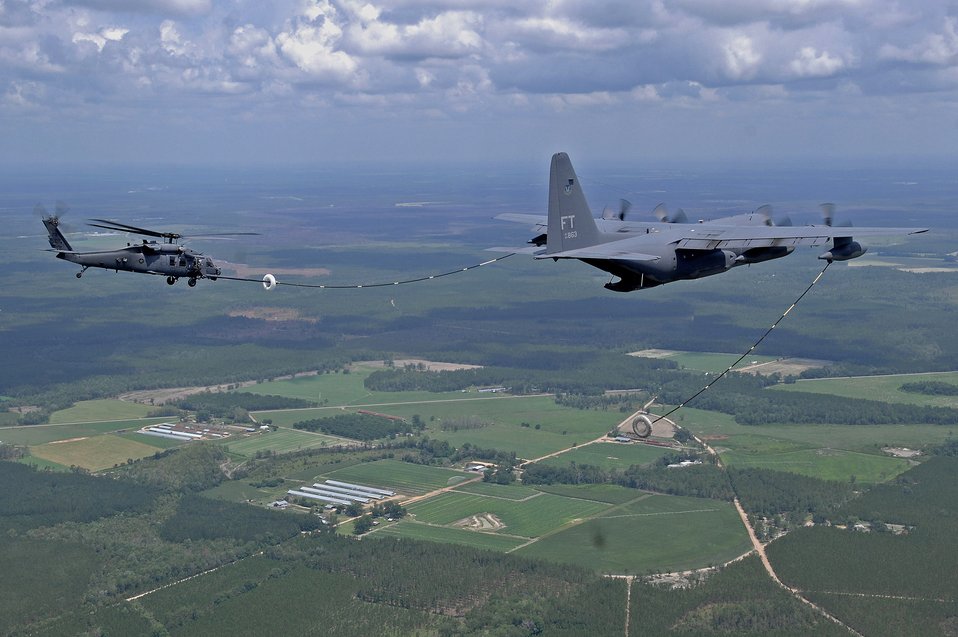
Gassing up over the Georgia countryside

A C-130 Hercules refuels an HH-60 Pave Hawk helicopter June 27 during an aerial refueling mission. The aircraft and crews are assigned to the 23rd Rescue Wing at Moody Air Force Base, Ga.